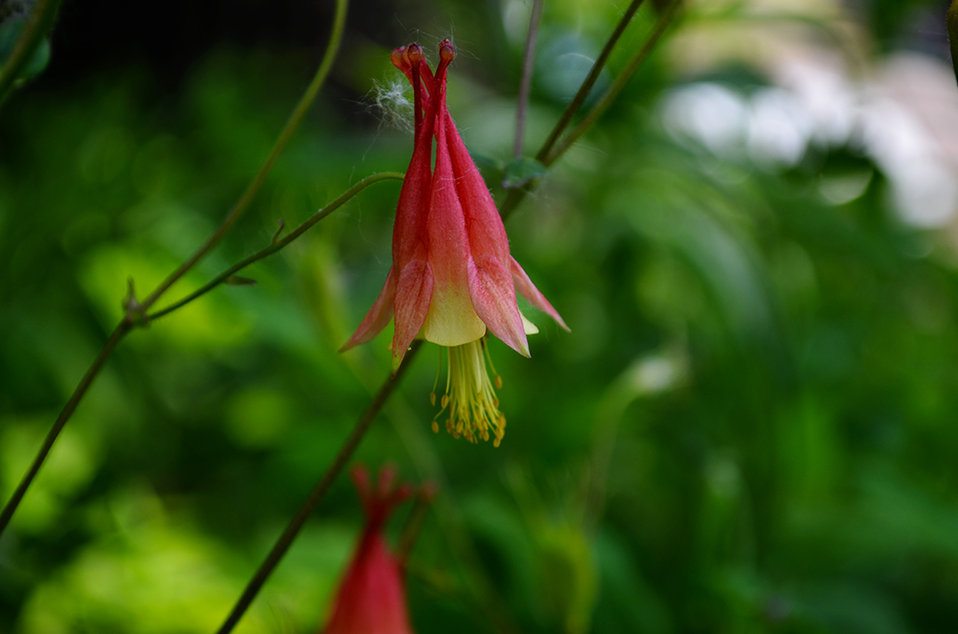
Wild Columbine